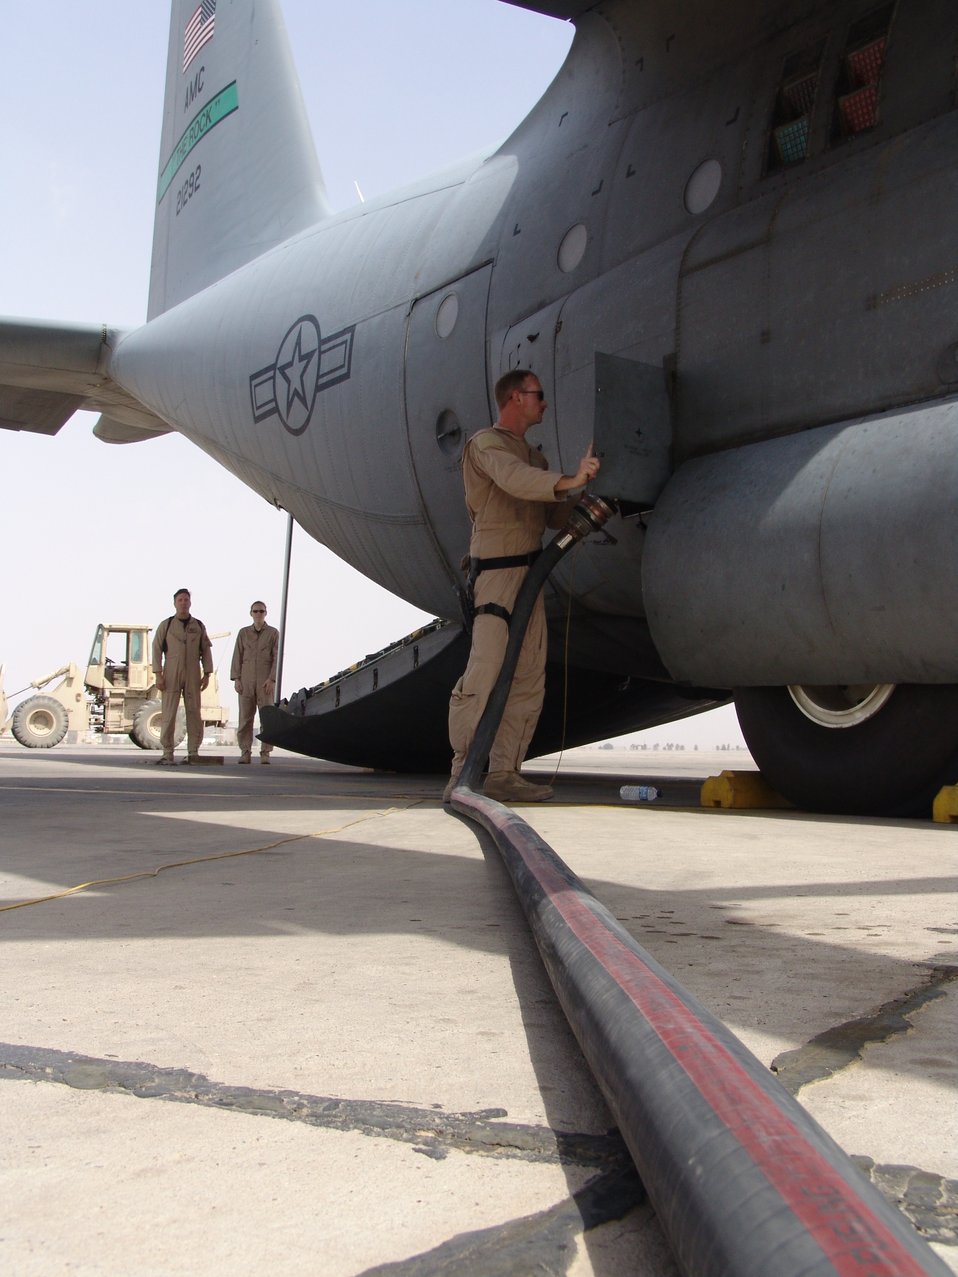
Mission time

BAGHDAD, Iraq -- Tech. Sgt. Bryan Setzer helps refuel a C-130 Hercules at Baghdad International Airport after a tactical airlift mission here. Sergeant Setzer is a flight engineer with the 737th Expeditionary Airlift Squadron at a forward-deployed location and is deployed from Pope Air Force Base, N.C.